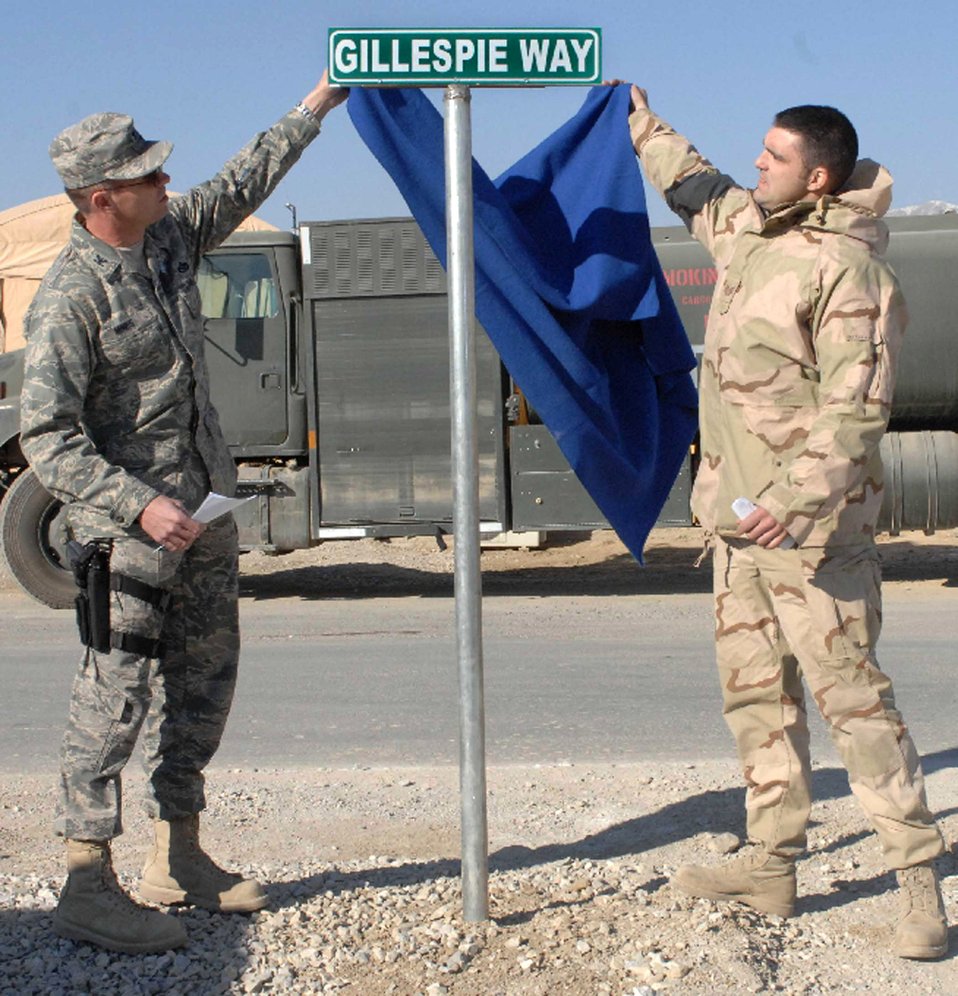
Airmen honor fallen comrade

Col. Barry Mines and Tech. Sgt. Blaine Arsenault unveil a sign dedicating a road to the memory of fallen Airmen Master Sgt. Randy Gillespie Dec. 1at Bagram Air Base, Afghanistan. Sergeant Gillespie was a career fuels specialist who died July 9 from wounds sustained during small arms fire near Herat, Afghanistan. Colonel Mines is the 455th Expeditionary Mission Support Group commander and Sergeant Arsenault is a 455th Expeditionary Logistics Readiness Squadron fuels specialist.